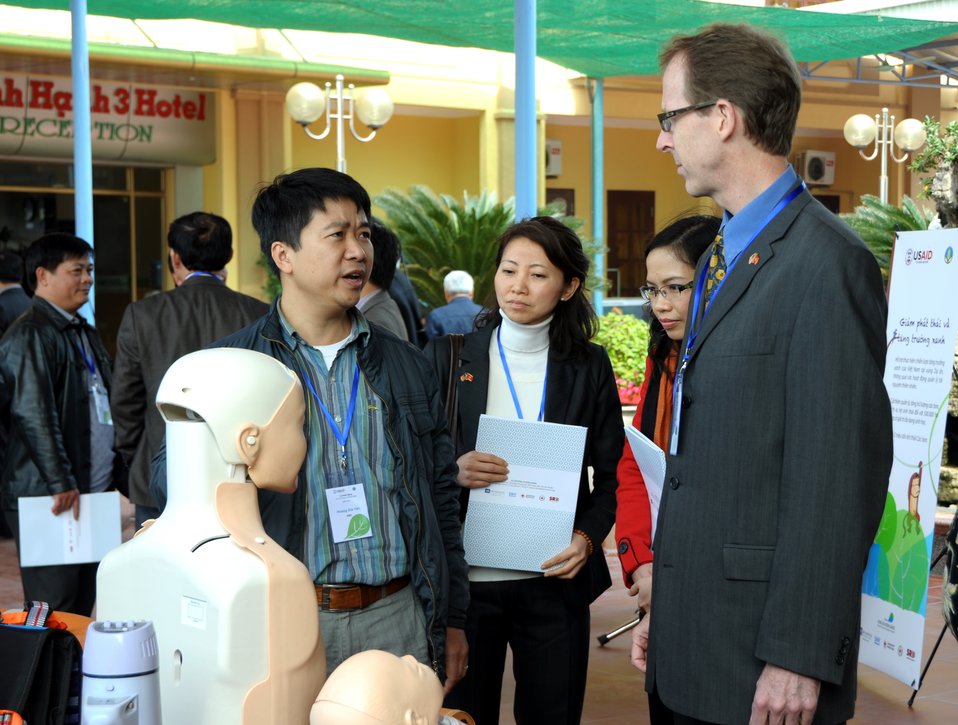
USAID launches the Vietnam Forests and Deltas project in Nam Dinh province.

Quat Lam, Nam Dinh. January 16, 2014.